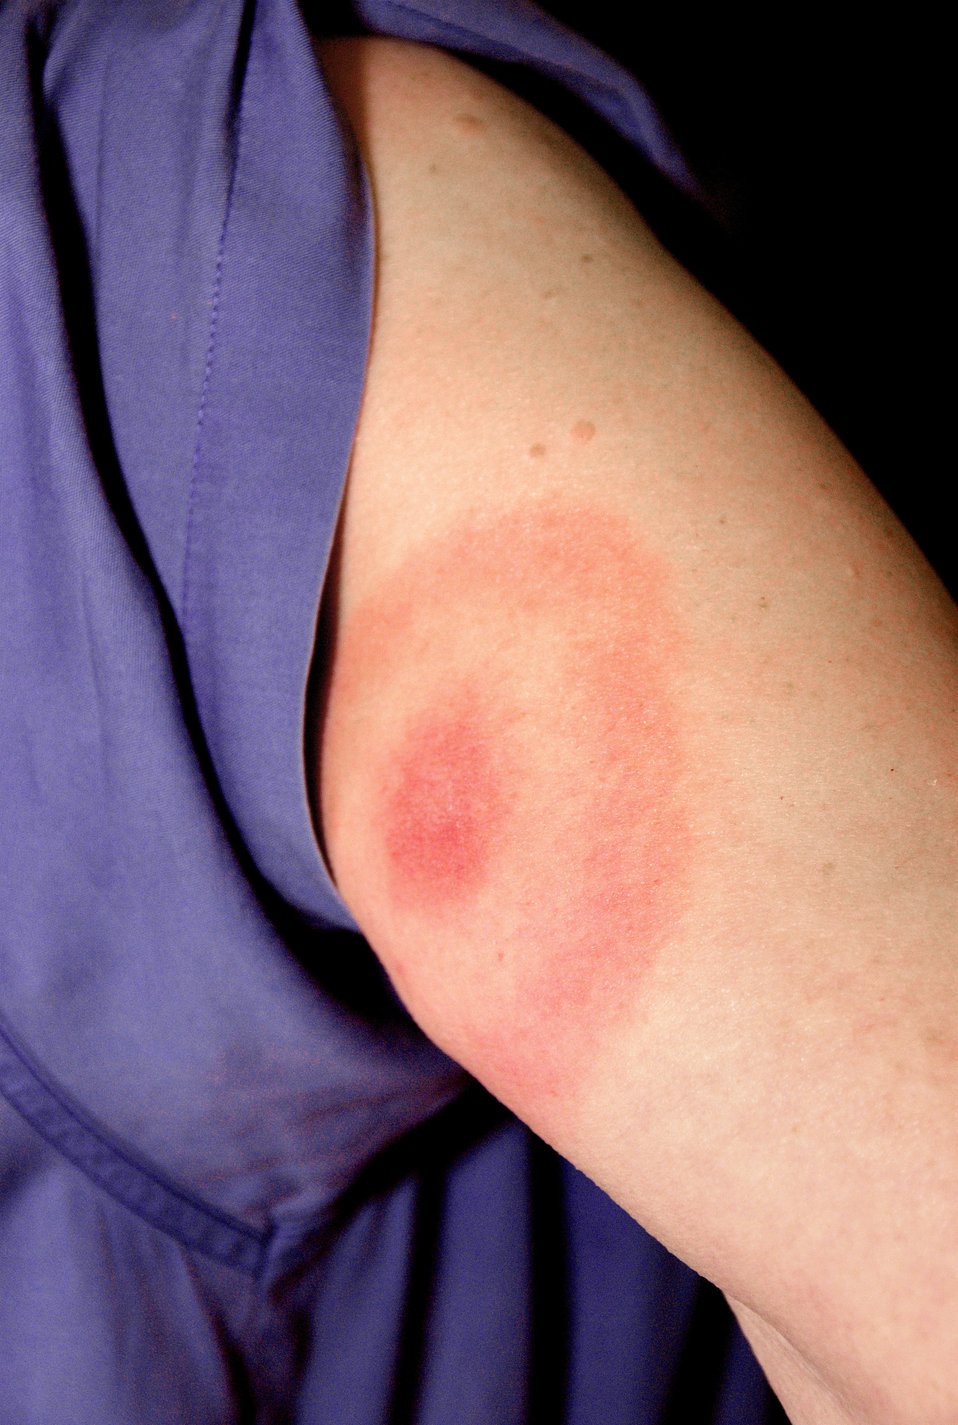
This 2007 photograph depicts the pathognomonic erythematous rash in the pattern of a 'bull's-eye', which manifested at the site of a tick bite on this Maryland woman's posterior right upper arm, who'd subsequently contracted Lyme disease.Lyme disease patients who are diagnosed early, and receive proper antibiotic treatment, usually recover rapidly and completely. A key component of early diagnosis is recognition of the characteristic Lyme disease rash called erythema migrans. This rash often manifests itself in a 'bull's-eye' appearance, and is observed in about 80% of Lyme disease patients.